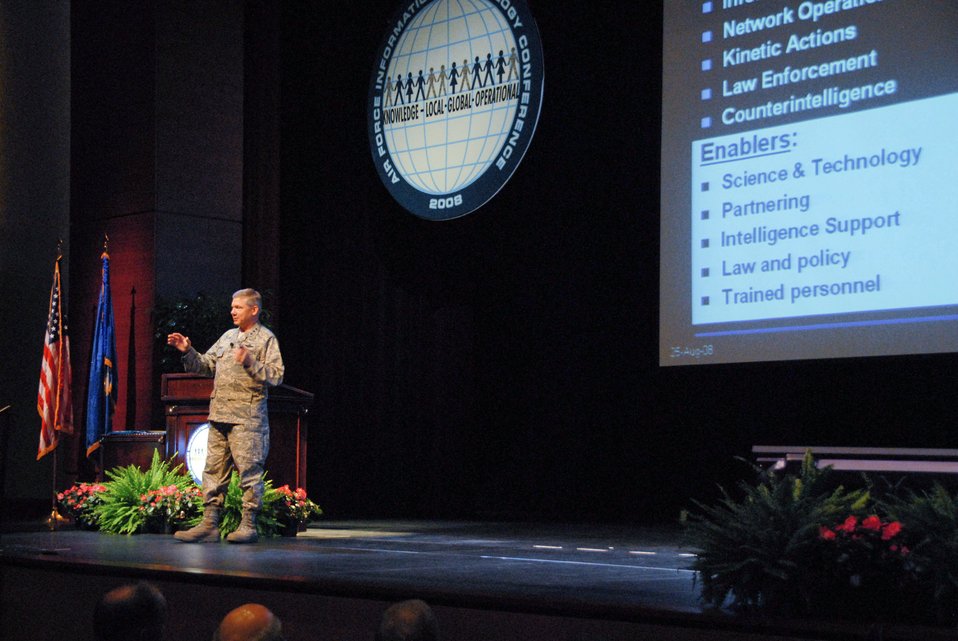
Air Force IT Conference kicks off

Lt. Gen. Robert J.